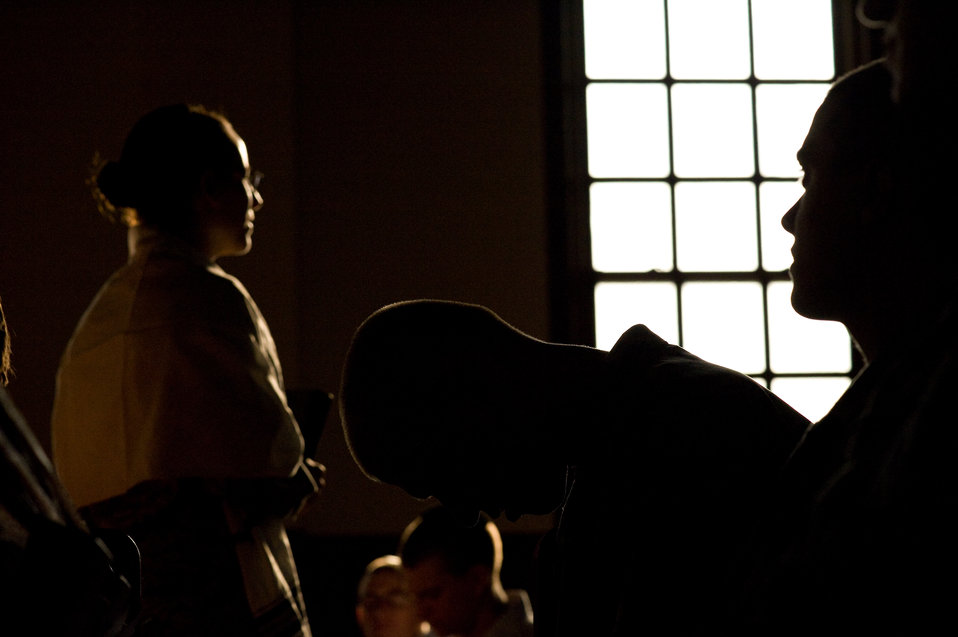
U.S. Air Force Chaplaincy

U.S. Air Force Rabbi, Chaplain, Captain Sarah D. Schechter (standing and wearing a tallit, prayer shawl) leads the evening le'il shabbat service using notes and a special edition siddur: